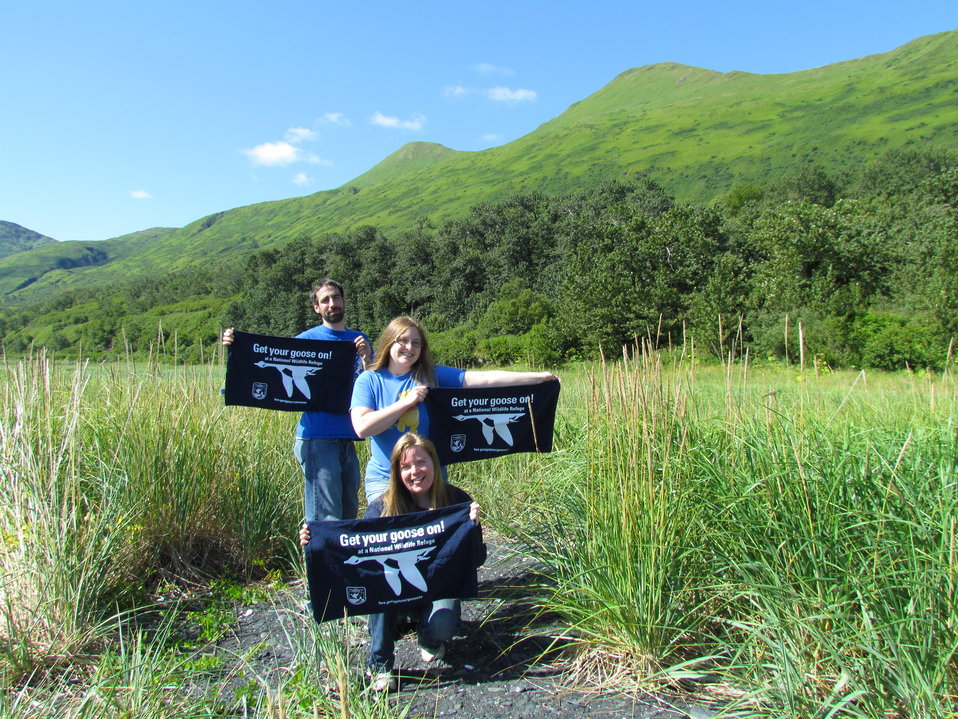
Get Your Goose On! - Alaska Style

Student Conservation Association interns, Rory Psotka, Ali Sutton and Kristen Riesberg

Credit: Shelly Lawson / USFWS

The Kodiak National Wildlife Refuge is a United States National Wildlife Refuge in the Kodiak Archipelago in southwestern Alaska, United States.

The Kodiak National Wildlife Refuge includes the southwestern two-thirds of Kodiak Island, Uganik Island, the Red Peaks area of Afognak Island and all of Ban Island in the archipelago. It encompasses 1,990,418 acres (8,054.94 km2).[2] The refuge is administered from offices in Kodiak.

The refuge contains seven major rivers and about 100 streams. It is a spawning ground for all six species of Pacific Ocean salmon, trout and several other fish species, as well as a nesting ground for 250 species of bird, many of which feed on salmon. The refuge has only six native species of mammals: Kodiak brown bear, red fox, river otter, ermine, little brown bat and tundra vole. The non-native mammals Sitka deer, mountain goat, Roosevelt elk, snowshoe hare and beaver were introduced to the archipelago between the 1920s and 1950s and are now hunted and trapped.

The climate of the refuge is that of southern Alaska, mild and rainy. Many areas in the refuge are densely forested with Sitka Spruce at lower elevations. There are grasslands in drier areas and at higher elevations. The refuge contains several small glaciers.